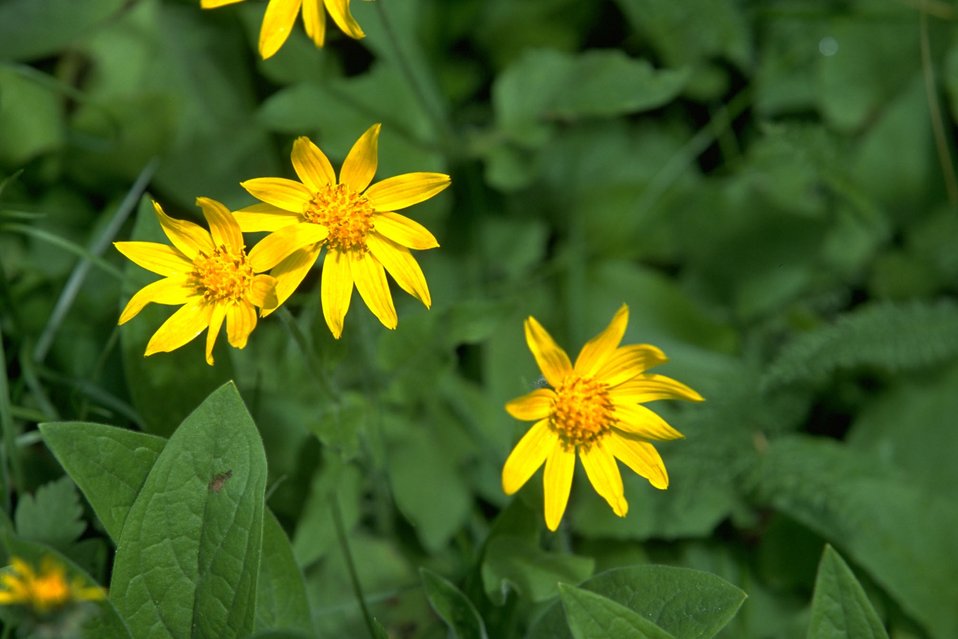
Closeup of yellow flowers in the Judith Mountains